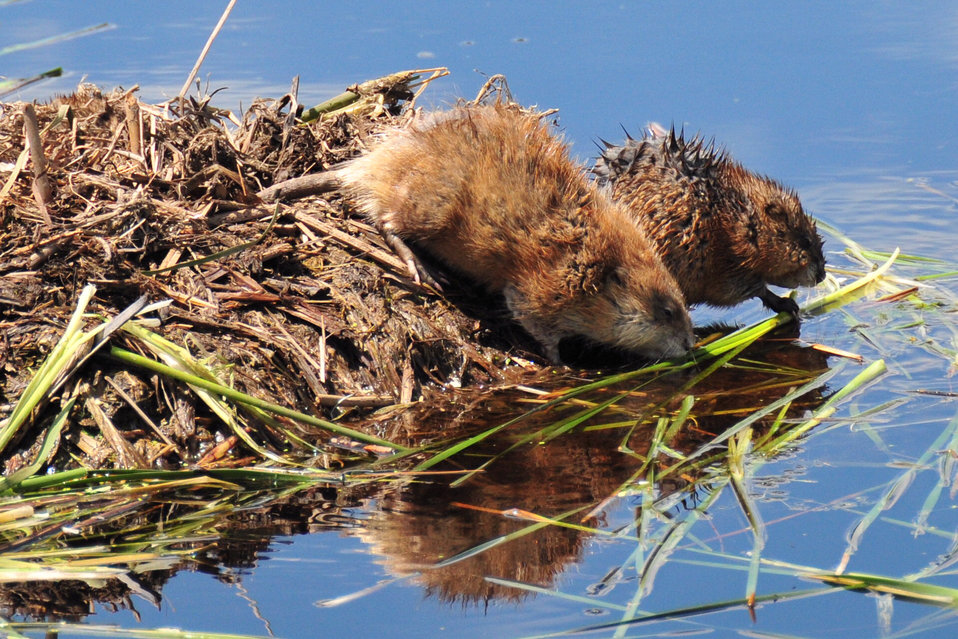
Muskrat pair feeding on Lacreek NWR 01

A pair of muskrats feeding on cattail stems on Lacreek NWR Photo: Tom Koerner/USFWS